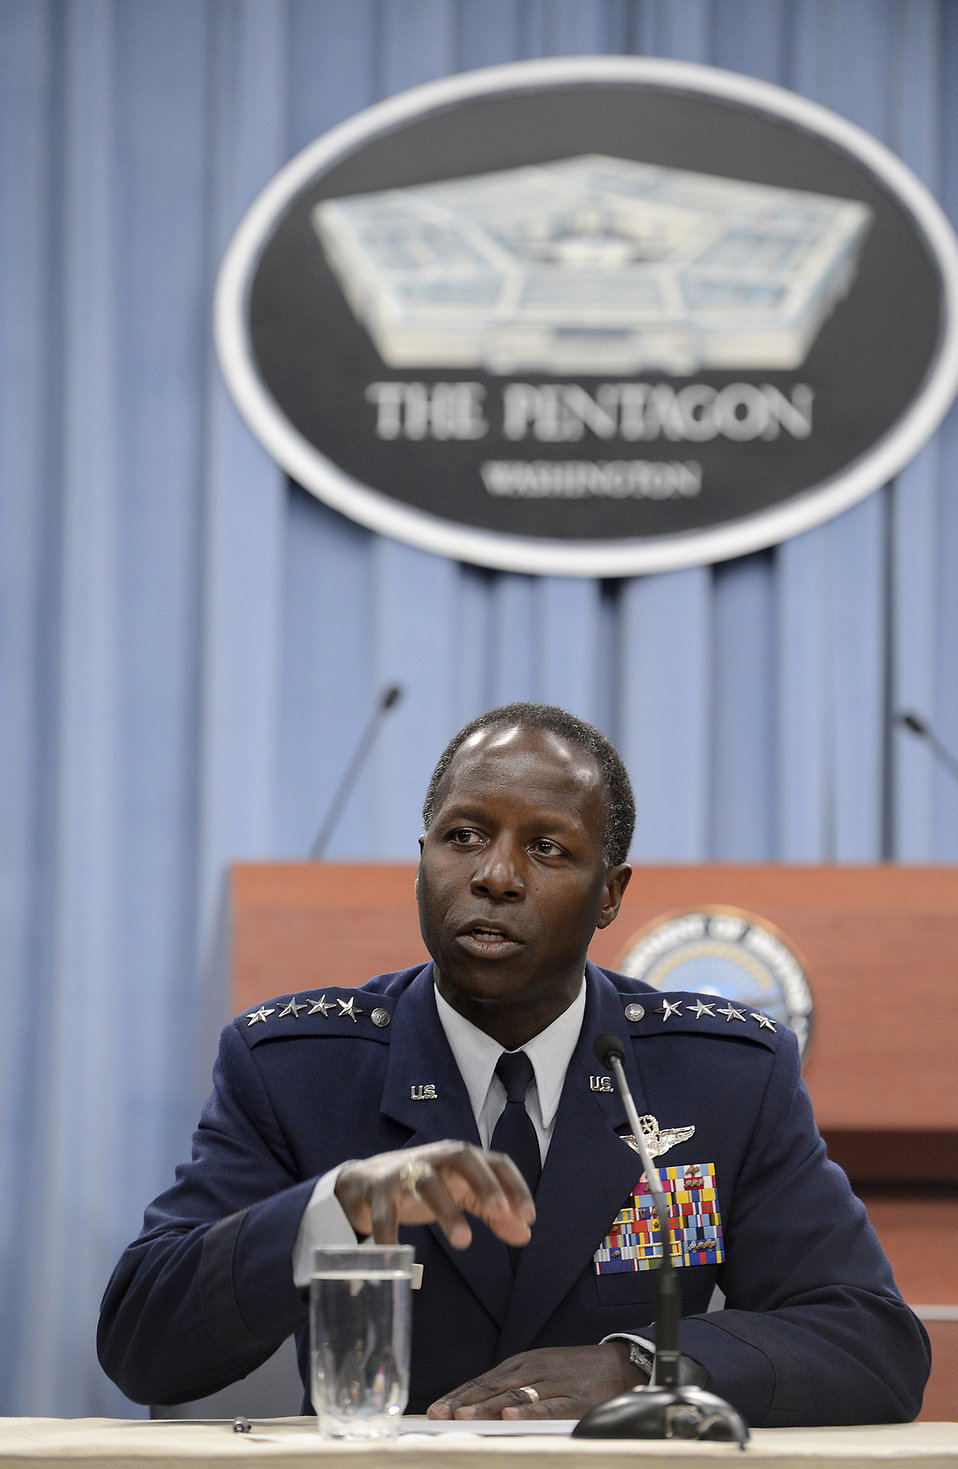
BMT sexual misconduct investigation findings

Gen. Edward Rice Jr., commander of Air Education and Training Command, answers during a Pentagon press briefing on Nov. 14, 2012. Rice presented the investigation findings from allegations of sexual misconduct at Basic Military Training. Also at the press briefing was Maj. Gen. Margaret Woodward, Air Force Chief of Safety and commander of Air Force Safety Center at Kirtland Air Force Base, N.M., who led the investigation.